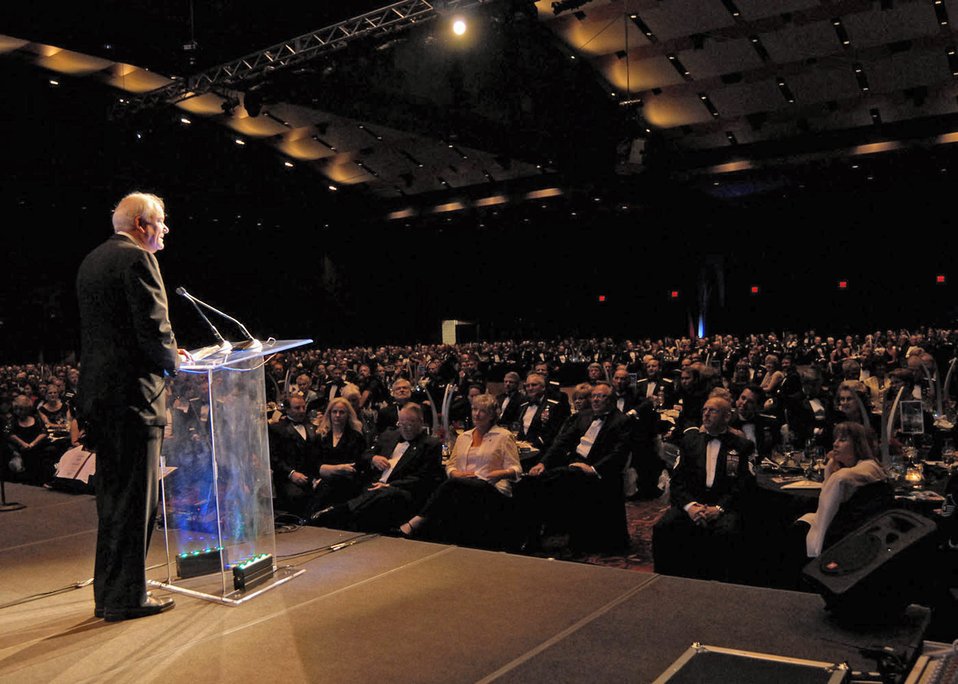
AETC Airmen gather at command symposium

Secretary of the Air Force Michael W. Wynne addresses attendees of the Air Force 60th Anniversary Ball Sept. 7 at the Henry B. Gonzalez Convention Center in San Antonio. The event completed the 2007 Air Education and Training Command Symposium.